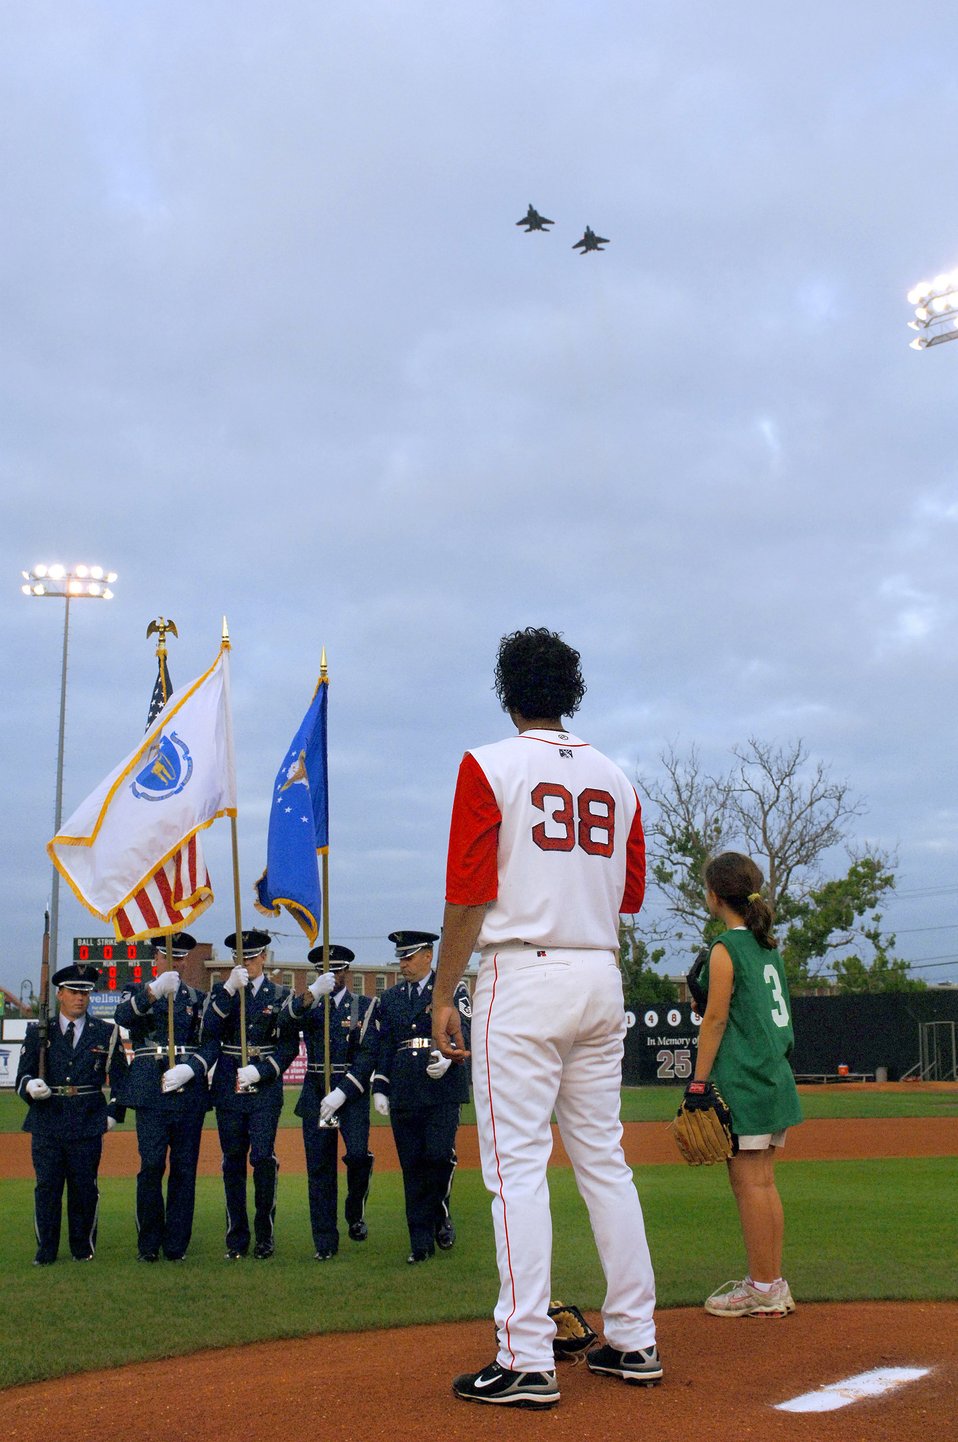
General, Red Sox icon make Air Force Week pitches

As part of Air Force Week New England festivities, two F-15 Eagles from the Massachusetts Air National Guard perform a fly-over Aug. 23 during the national anthem at a minor league baseball game in Lowell, Mass.